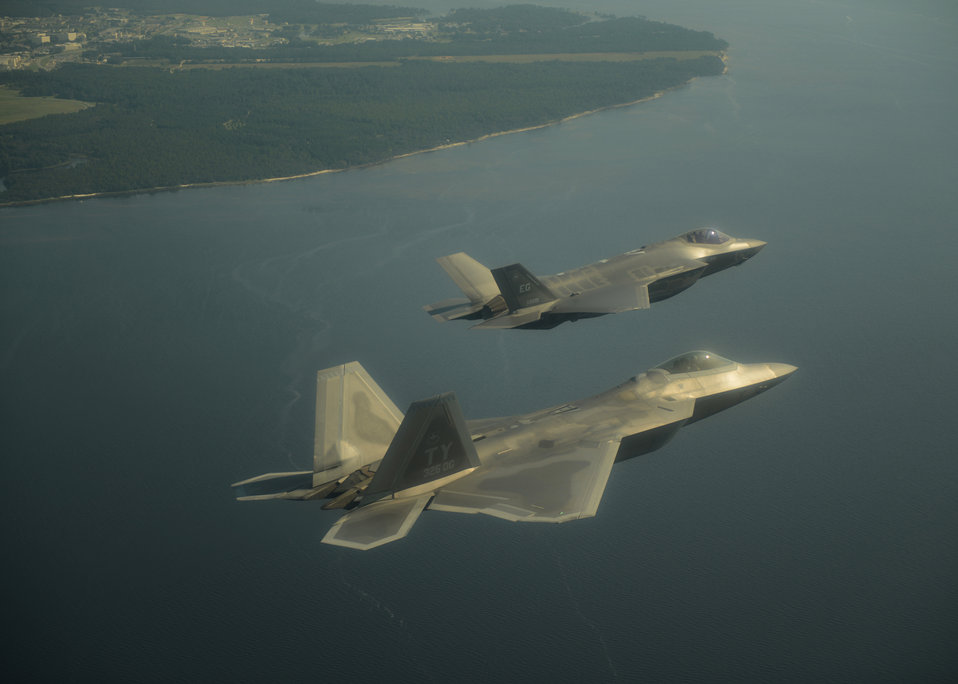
Fifth-generation formation

An F-22A Raptor, foreground, from the 43rd Fighter Squadron at Tyndall Air Force Base, Fla., and an F-35A Lightning II joint strike fighter from the 33rd Fighter Wing at Eglin Air Force Base, Fla., soar over the Emerald Coast Sept. 19, 2012. This was the first time the two fifth-generation fighters have flown together for the Air Force.